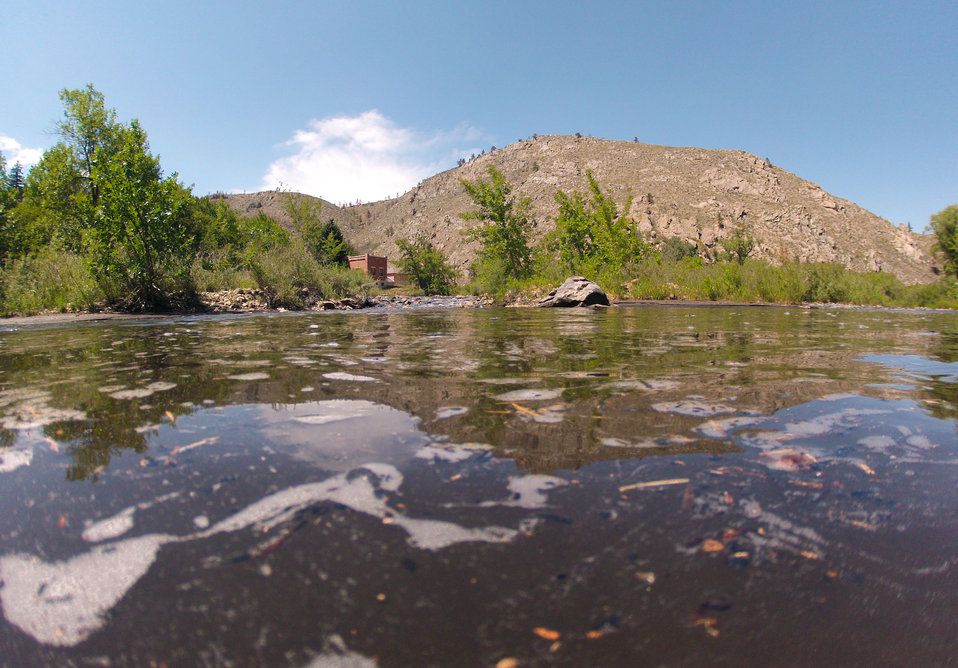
A confluence of two tributaries, the Cache la Poudre and the North Fork of the Cache la Poudre, near Seaman Reservoir, 60 miles north of Denver, Colorado on Friday, July 20, 2012, have been transformed from clear mountain waters to a nearly black water, heavily laden with ash, silt, and burnt debris that was recently washed down mountainsides by thunderstorms. The mountainsides were burned by the Hewlett Gulch Fire (May 14, 2012), in the Poudre Canyon area. At its peak more than 400 firefighters were battling fires pushed by 50 mph winds. When the last embers were cooled, more than 12-square miles lay blacked at a cost of approximately 3.2 million dollars. The aerial distribution of straw has successfully kept nearby Seaman Reservoir clean for the drinking water of the City of Greeley. Forest Service lands receive straw, while private and other lands receive a seed mix and straw to promote ground cover plant growth on ash-covered lands. In total, 1,800 tons of straw will be applied during the 14-day operation. One quarter of the cost was paid by the City of Greeley and the U.S. Department of Agriculture funded the remainder.